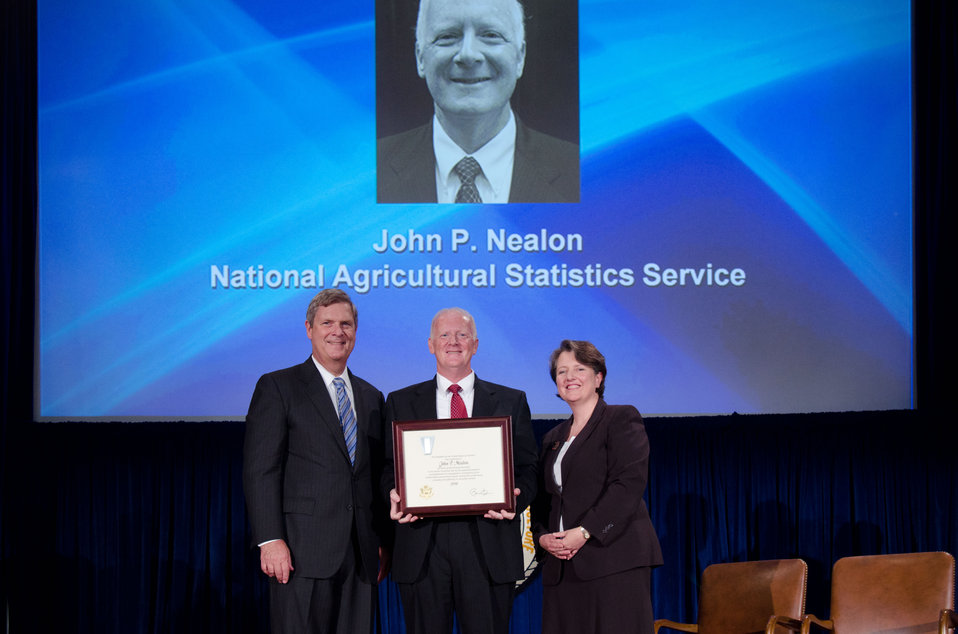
Agriculture Secretary Tom Vilsack (l) and Deputy Secretary Kathleen Merrigan (r), presents the Award to John P. Nelson, Senior Project Manager, Office of the Administrator, National Agricultural Statistics Service. The President of the United States of America has conferred John P. Nelson the rank of Meritorious Executive in the Senior Executive Service for sustained superior accomplishment in management of programs of the United States Government and for noteworthy achievement of quality and efficiency in the public service. On Wednesday, September 14, 2011 in the Jefferson Auditorium at the US Department of Agriculture in Washington, DC.